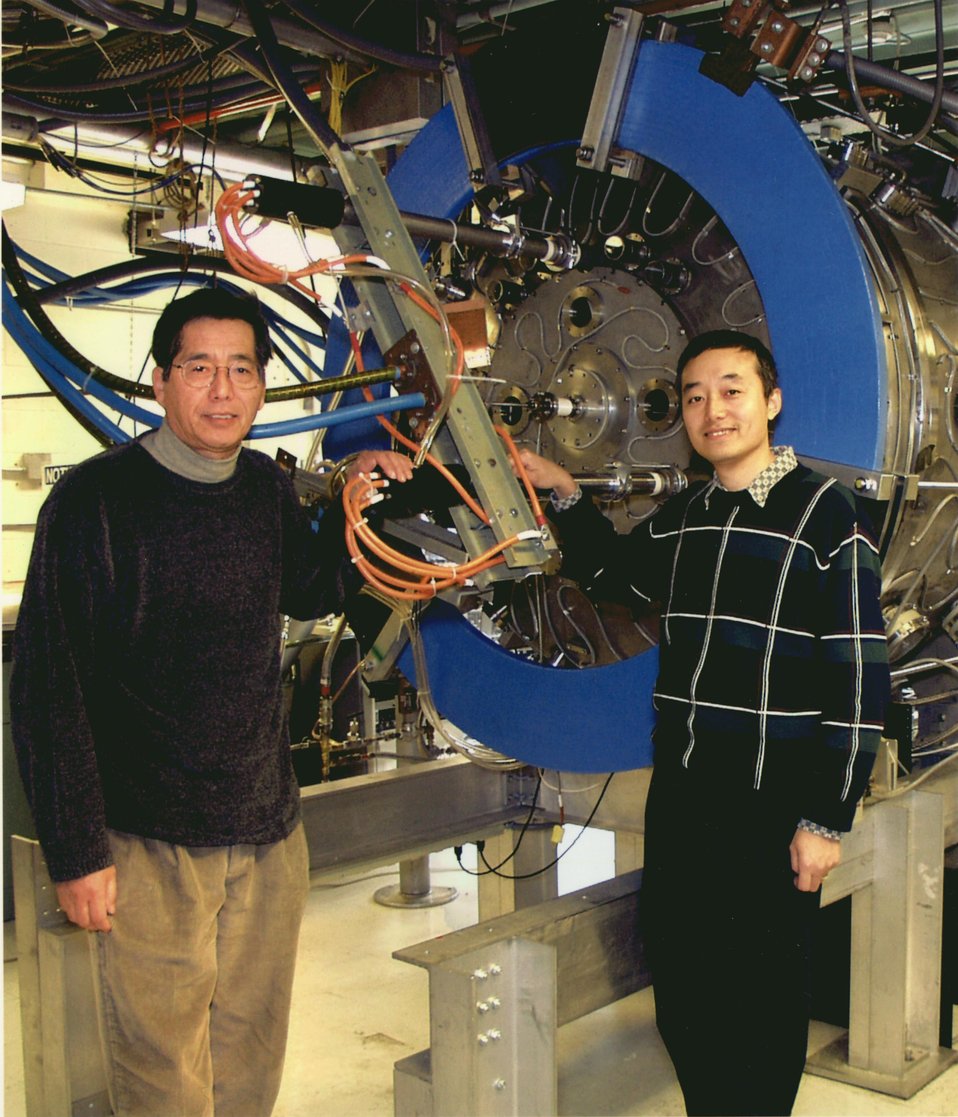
PPPL SCIENTISTS M. YAMADA (LEFT) AND H. JI STANDING NEXT TO THE MAGNETIC RECONNECTION EXPERIMENT.

THE RESEARCHERS RECEIVED THE AMERICAN PHYSICAL SOCIETY'S 2002 AWARD FOR EXCELLENCE IN PLASMA PHYSICS RESEARCH. THEY WERE RECOGNIZED FOR THEIR EXPERIMENTAL INVESTIGATION OF DRIVEN MAGNETIC RECONNECT ION IN A LABORATORY PLASMA, A FUNDAMENTAL PROCESS OF PLASMA PHYSICS WITH IMPORTANT RELEVANCE TO FUSION RESEARCH.